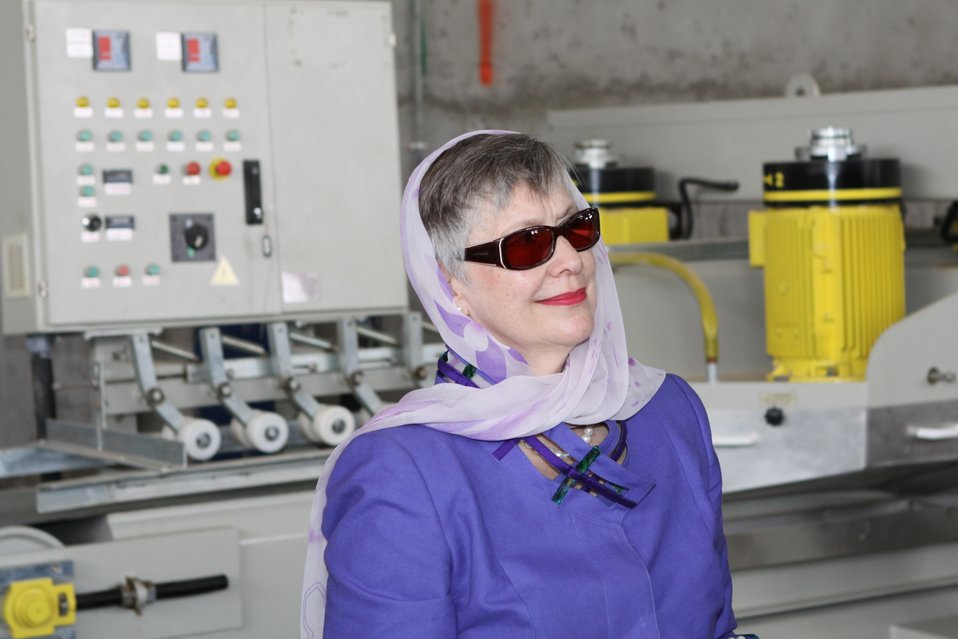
100525 Hirat Marble Conference 356